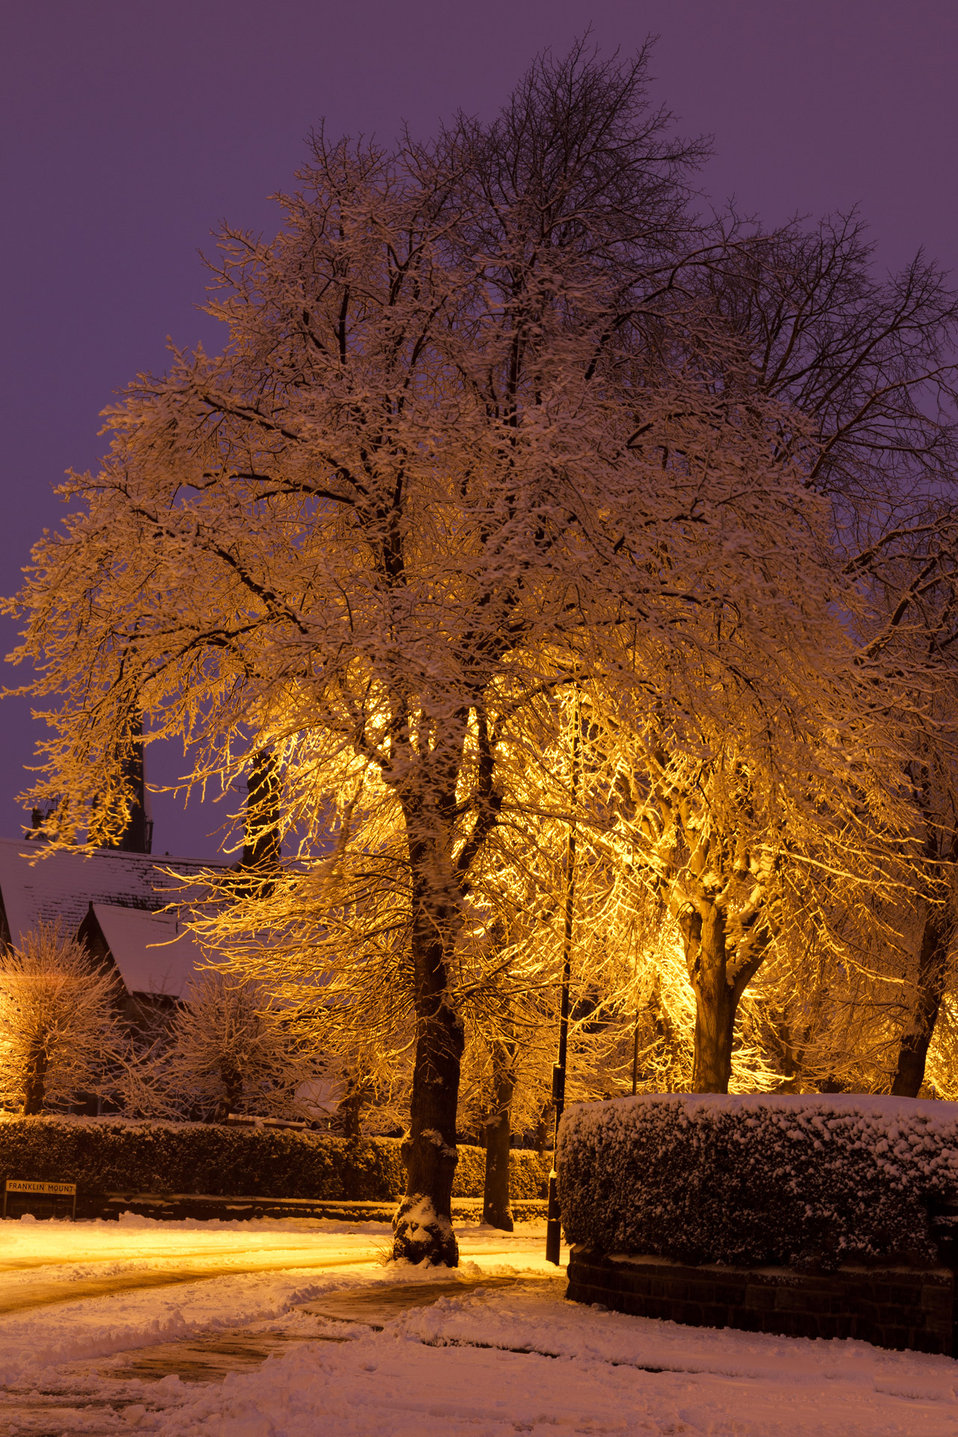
Snow covered tree at night with illuminated by a street lamp.